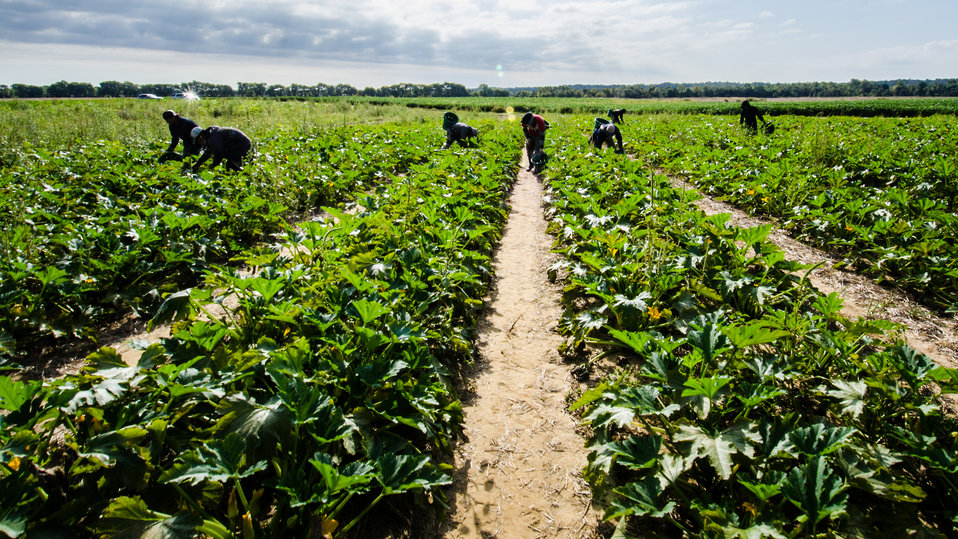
Migrant workers carefully choose and cutoff yellow squash at Kirby Farms in Mechanicsville, VA on Sep. 20, 2013. Kirby Farms is a third-generation family farm that covers 500 acres, and generates produce and grains on a year-around operation.